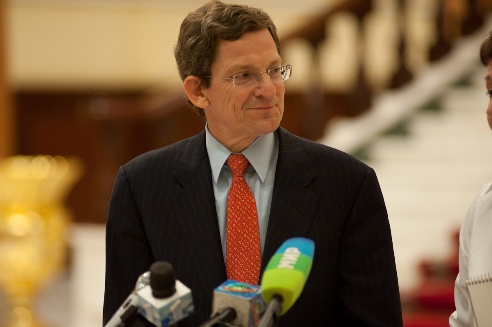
Ambassador Grossman Addresses the Press

U.S. Special Representative to Afghanistan and Pakistan Marc Grossman addresses the press in Dushanbe, Tajikistan, on May 20, 2011.